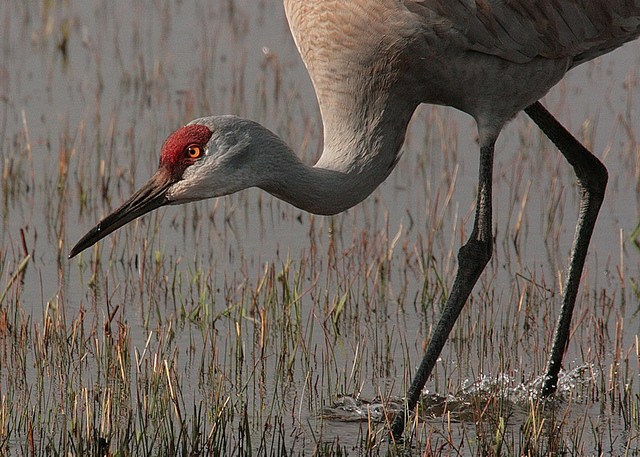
Malheur National Wildlife Refuge, OR

Greater sandhill crane